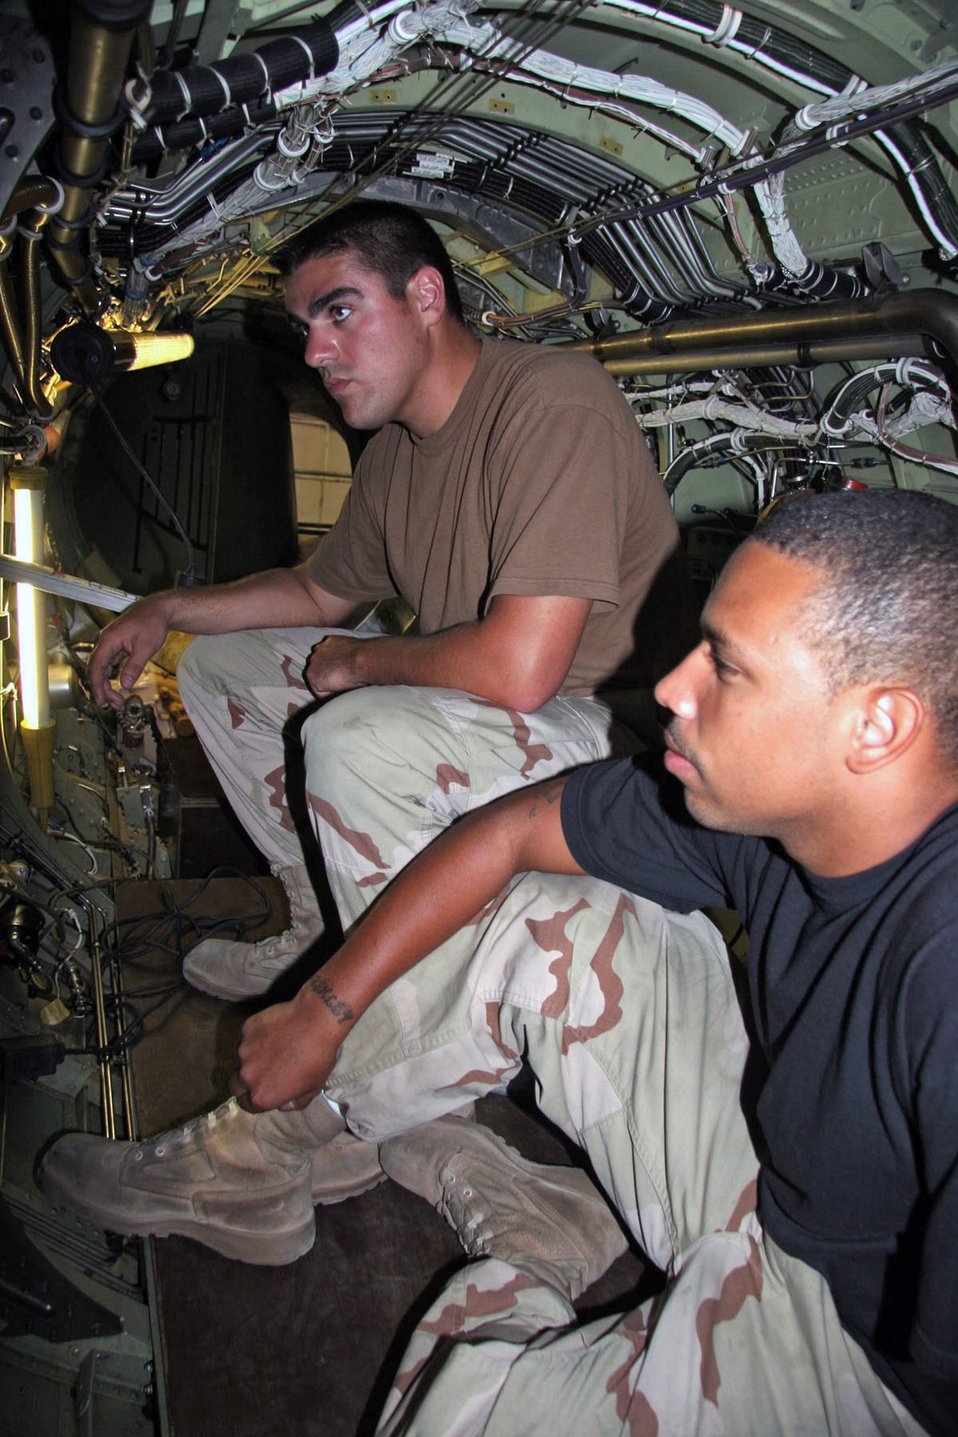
NCO saves Airman's life with Heimlich maneuver

Staff Sgt. Justin Hicks (left) reviews maintenance completed on a U-2 aircraft with Airman 1st Class Alejandro Betancourt while deployed to a base in Southwest Asia. Sergeant Hicks saved a choking Airman in the Oasis dining facility Sept. 1. Sergeant Hicks is a U-2 crew chief currently assigned to the 99th Aircraft Maintenance Squadron here and is deployed from the 9th Aircraft Squadron at Beale Air Force Base, Calif.